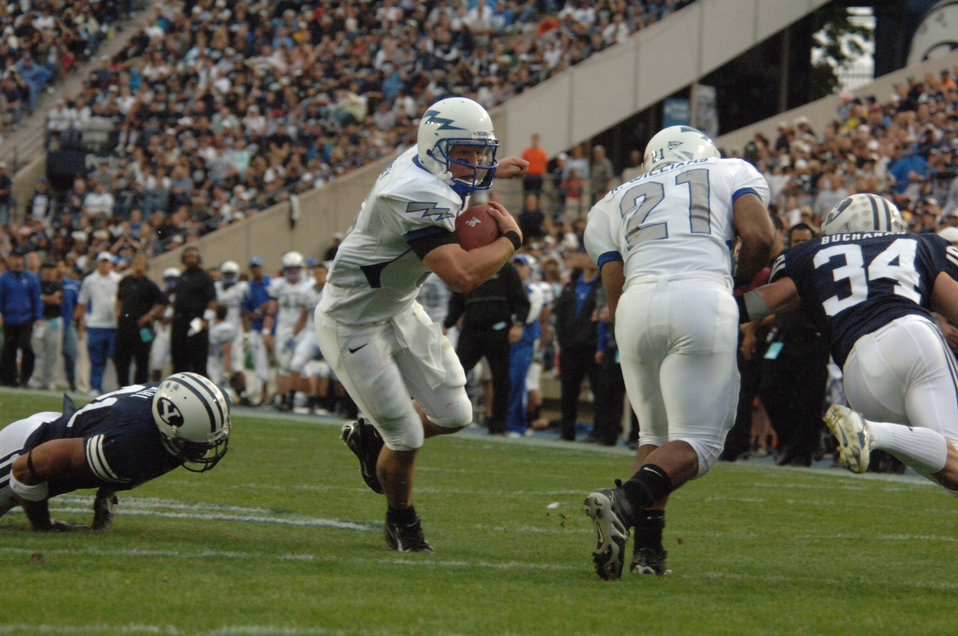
Falcons eye history after BYU loss, seeks redemption at Annapolis

Air Force quarterback Shaun Carney runs behind a block from fullback Ryan Williams, 21, en route to an 8-yard touchdown during Brigham Young's 31-6 win Sept. 22 in Provo, Utah. Carney's TD extended the Falcons consecutive game-scoring streak to 172 games.